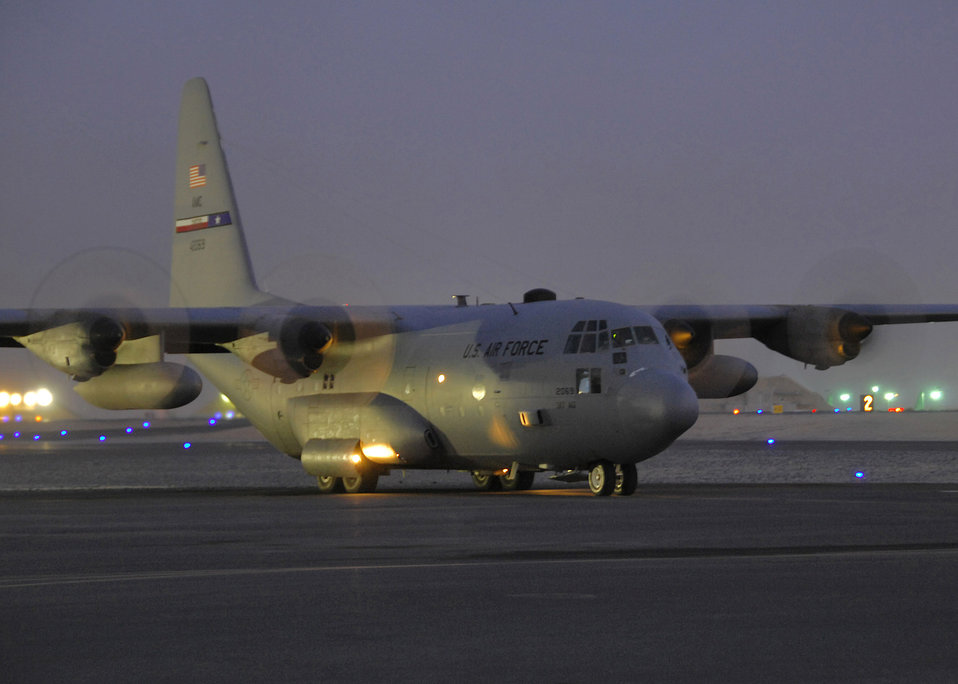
Dec. 17 airpower summary: C-130s support heavy airlift

A C-130 Hercules prepares for a nighttime departure sortie mission enroute to Iraq. C-130s are prime transporters of cargo, passengers and troop resupply and support heavy airlift missions throughout Southwest Asia. This C-130 is deployed from Dyess Air Force Base, Texas and is assigned to the 386th Air Expeditionary Wing at an undisclosed base in Southwest Asia.